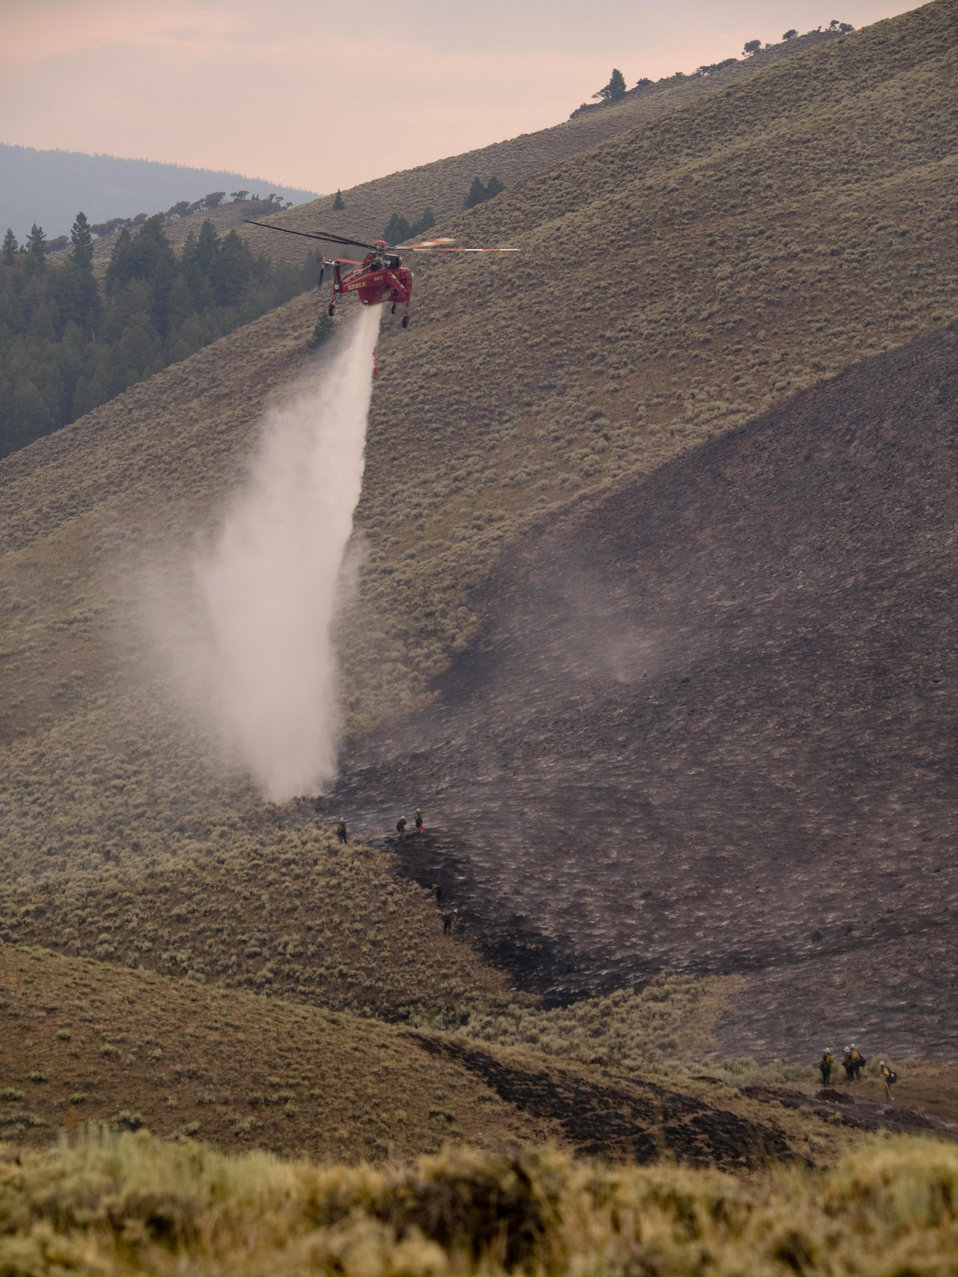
Helicopter makes water drop to aid firefighters working on the Lodgepole Fire. The Lodgepole Fire in the Salmon-Challis National Forest near Challis, ID began on Jul. 20, 2013 by lightning has consumed approximately 13,700 acres and is approximately 15% contained.